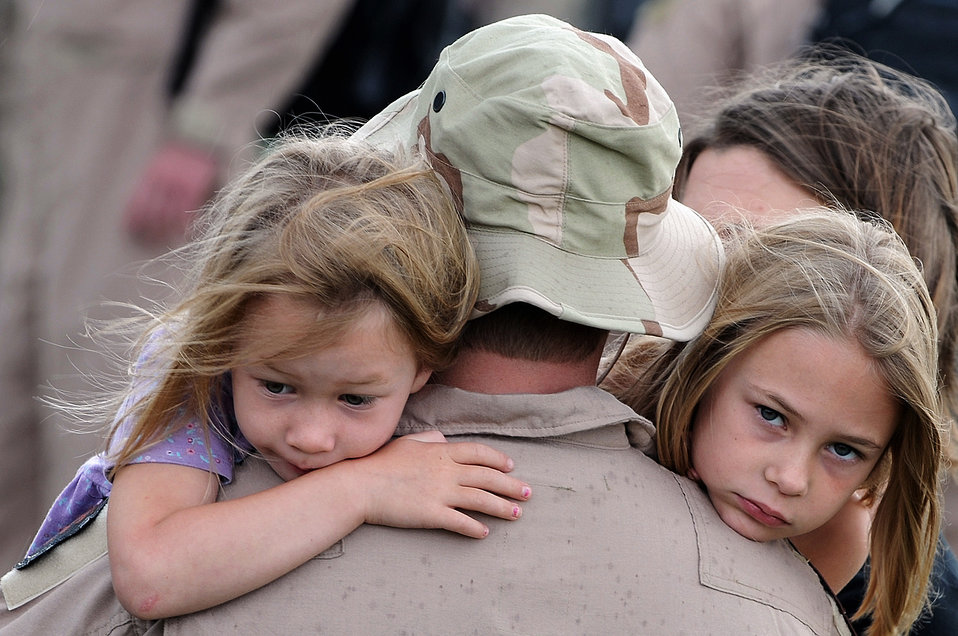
I'll be back soon

1st. Lt. William Jacks hugs his daughters Rachel (left) and Anna July 22 at Ellsworth Air Force Base, S.D., before deploying. Lieutenant Jacks is a B-1B Lancer pilot assigned to the 34th Bomb Squadron.